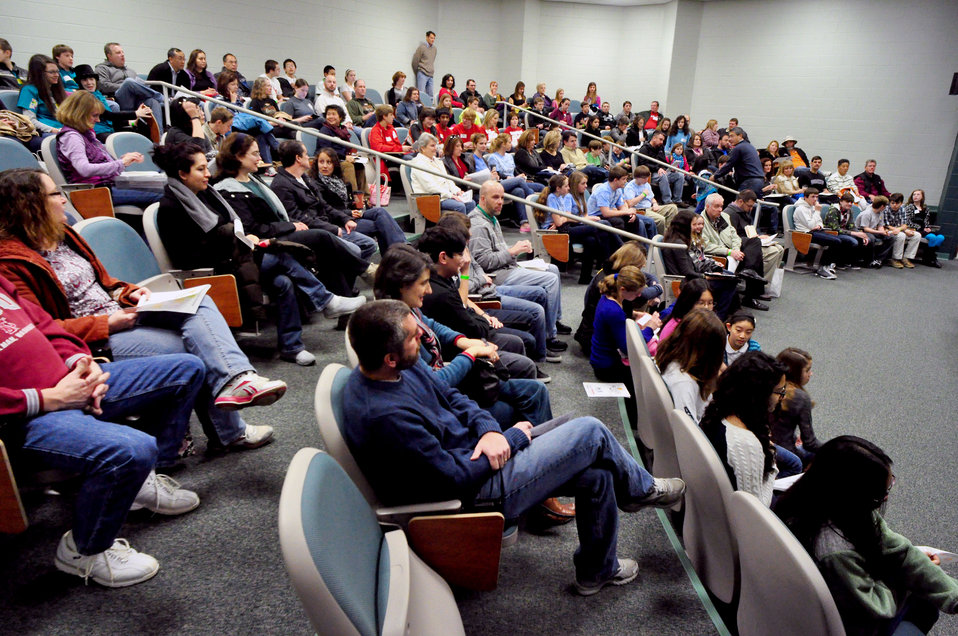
DOE Middle School Science Bowl

14-017 DOE photo Lynn Freeny 2-1-2014 Oak Ridge Tennessee